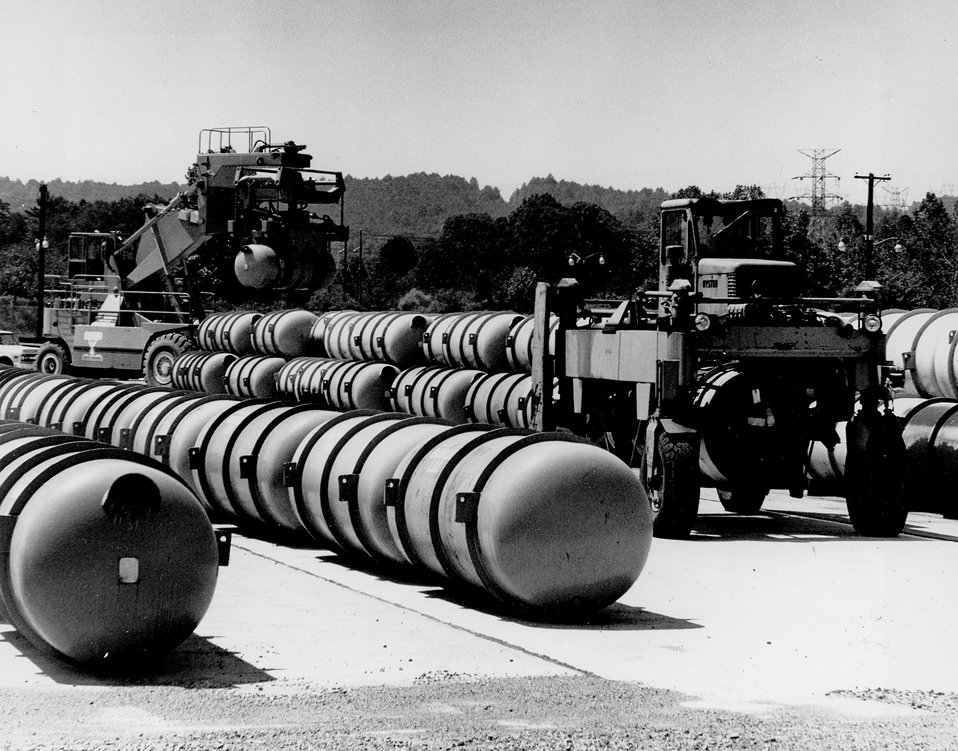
OAK RIDGE, TENNESSEE...Uranium enrichment through gaseous diffusion. The large tanks weigh 10 tons and contain feed material, uranium hexaflouride, for the enrichment process.